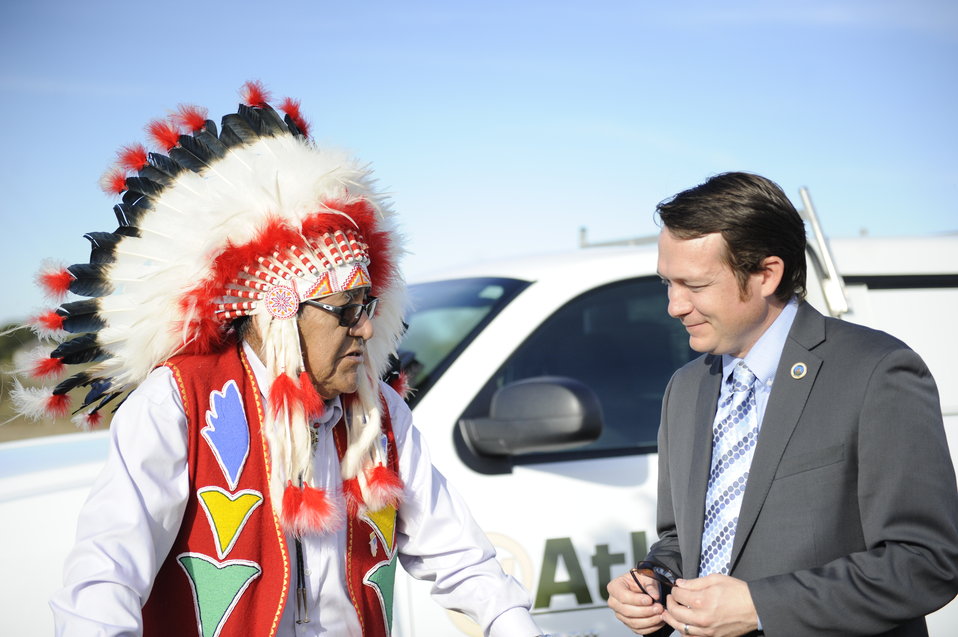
Oklahoma Rural Development State Director Ryan McMullen visits with Kiowa Tribal elder Jim Anquoe, following Anquoe’s blessing of the tower/project.